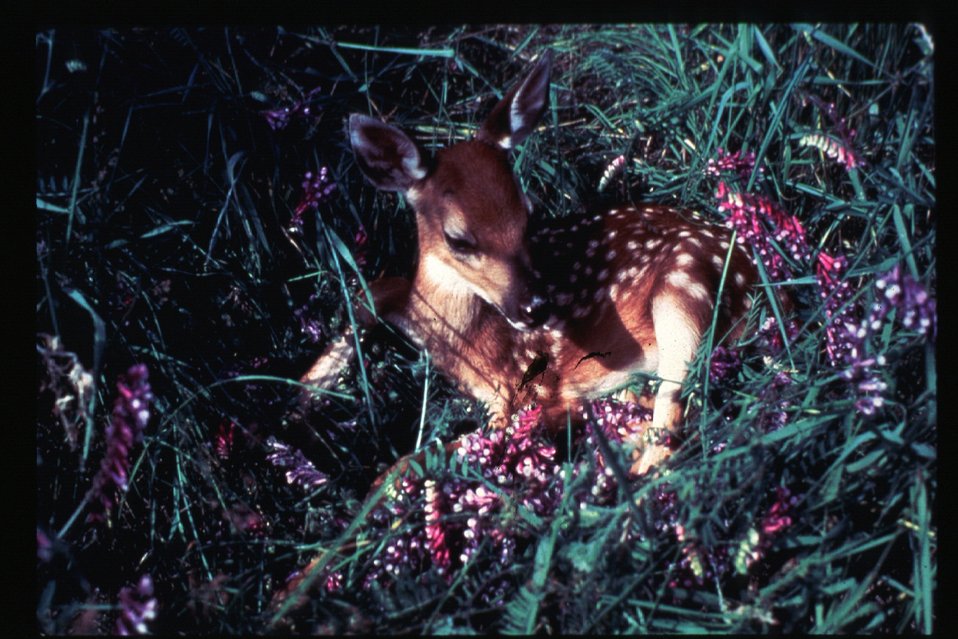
Young deer Wildlife LSRD Lower Snake River District